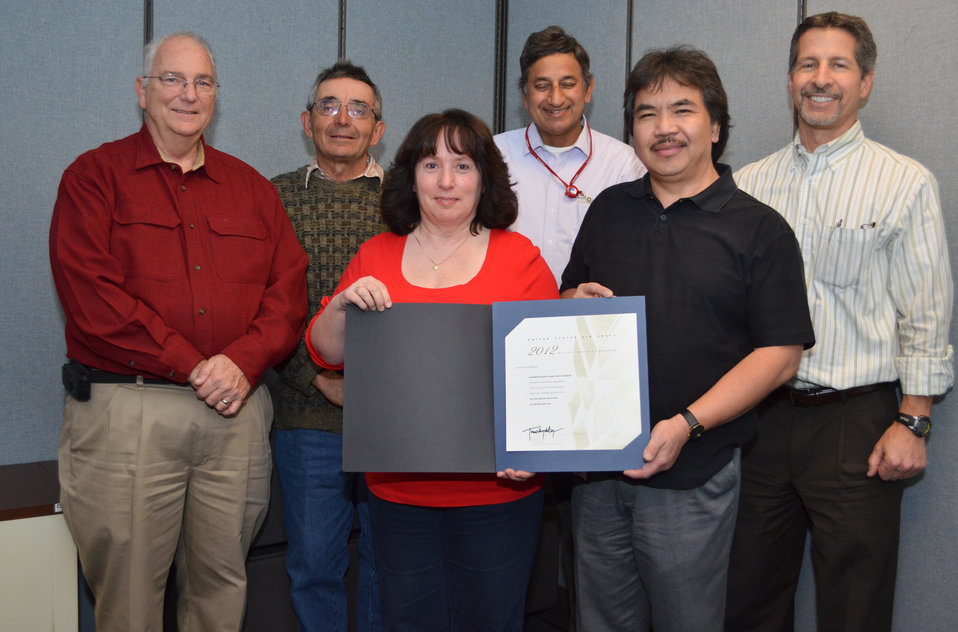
Sacramento District recognized by Air Force

The U.S. Army Corps of Engineers Sacramento District was recognized by the U.S. Air Force with a 2012 design award for the three-bay fire station at Hill Air Force Base, Utah. The $4.5 million Sacramento District project was completed in 2011, and received a Gold rating under the Leadership in Energy and Environmental Design program. The facility is the first fire station built at Hill since 1943 and was positioned to support the existing C-130 hangar nearby, along with the growing F-22 complex at the base.

From left to right, Chuck Hubbard, project manager; Jeff Perlegos, structural engineer; Kathryn Stephens, interior designer; Surender Singal, electrical engineer; Octavio R. Aquino, architect; and Scott Barmann, mechanical engineer, pose with the 2012 Design Award at the Sacramento District headquarters in Sacramento, Calif., Jan. 28, 2013.